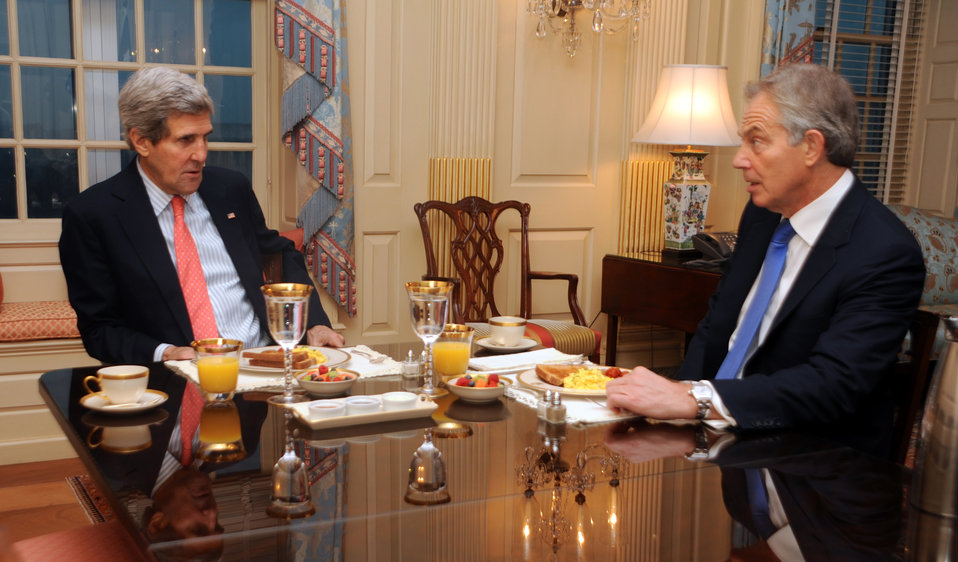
Secretary Kerry Holds Breakfast Meeting With Former British Prime Minister Blair

U.S. Secretary of State John Kerry and former British Prime Minister and Quartet Representative Tony Blair discuss Middle East peace efforts and other topics during a breakfast meeting in Washington, D.C., on February 5, 2014.